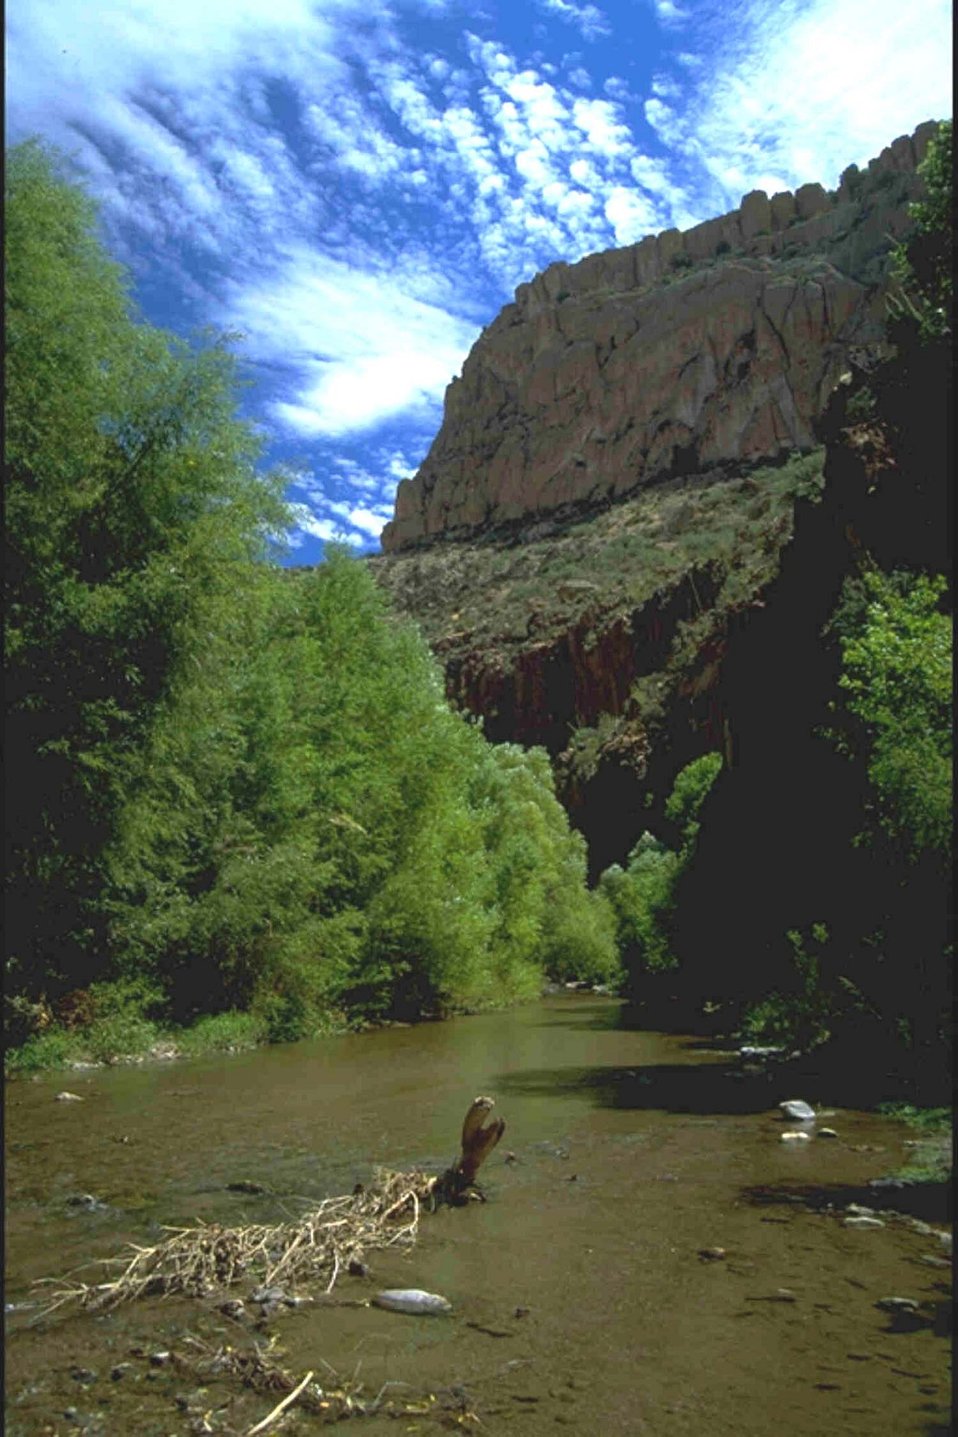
Lush riparian tree growth lines up along the banks of the creek in the western canyon.